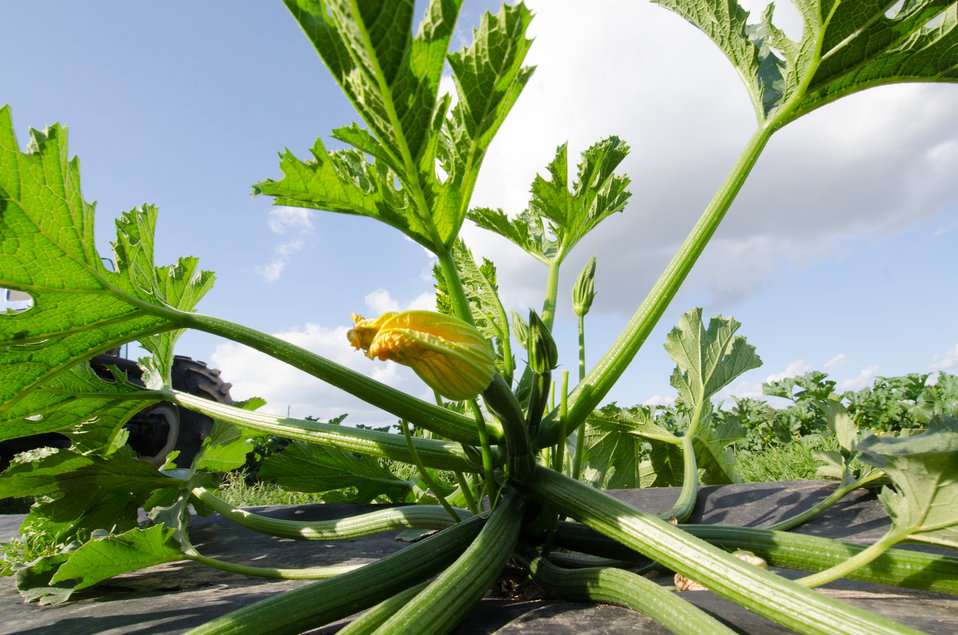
Kirby Farms third-generation family farm in Mechanicsville, VA, uses micro irrigation (drip watering) and plastic mulch (row covering) to efficiently grow green zucchini squash, on Friday, Sept 20, 2013. Water is pumped through a filtration/regulator system to flexible distribution pipes and hard connectors. Emitter hoses can be driven in where needed. Pressurized hoses emit water at a very slow rate near the base of the plants. Computers or timers provide additional controls. A micro irrigation system, also known as drip or trickle irrigation, is used to water directly to the plant root zone utilizing surface or subsurface applicators. For more information please see www.nrcs.usda.gov/Internet/FSE DOCUMENTS/nrcs141p2 024038...
Plastic sheeting is a form of mulch. It conserves soil moisture and reduces energy
use associated with irrigation, moderates soil temperature, provide erosion control, suppresses weed growth, facilitates the establishment of vegetative cover, improves soil quality, and reduces airborne particulates.